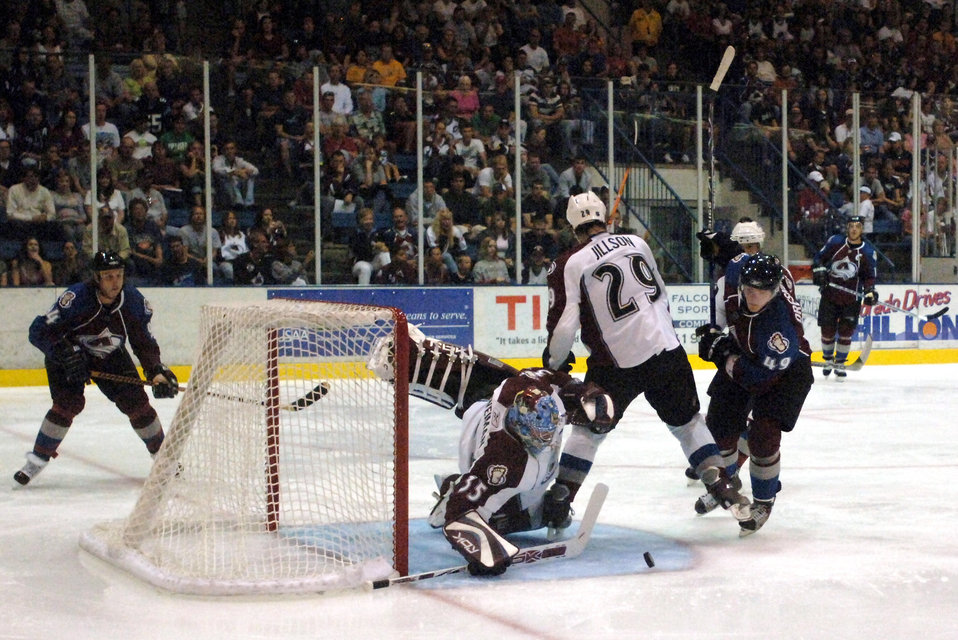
Avalanche breaks the ice at Academy

Colorado Avalanche goalie Tyler Wieman focuses on the puck while defenseman Jeff Jillson gets a leg up on Victor Oreskovich during the NHL team's Burgundy and White intra-squad scrimmage Sept. 16 at the Cadet Ice Arena at the U.S. Air Force Academy in Colorado Springs, Colo. It was the first time an NHL team ever played at the Academy.